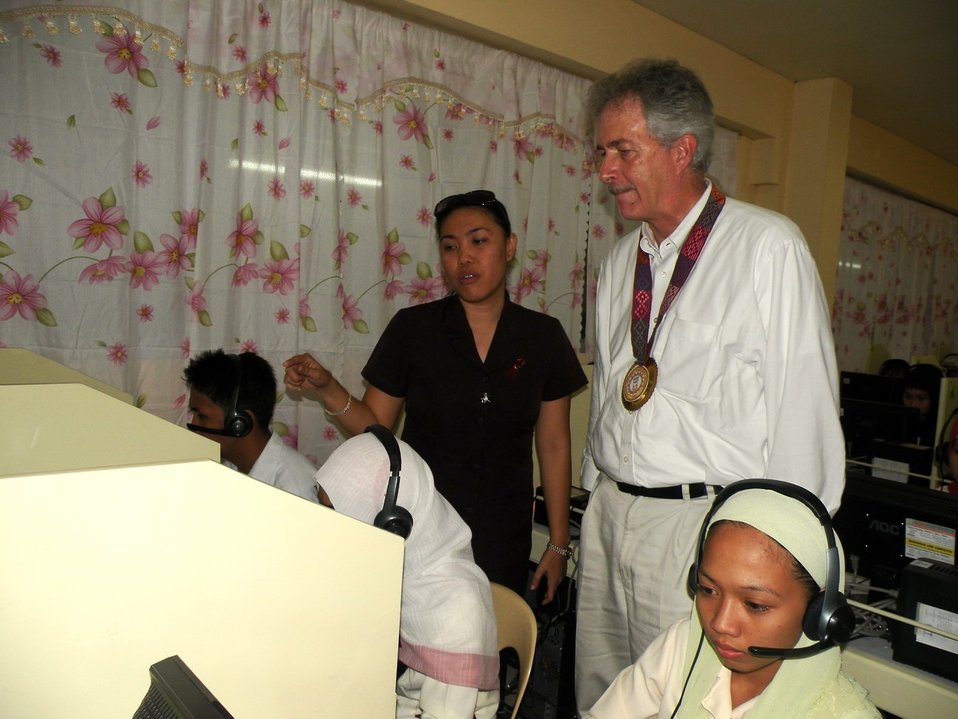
Under Secretary Burns Observes Filipinos Work on a USAID-Funded Project

U.S. Under Secretary William J. Burns observes Filipinos work on a USAID-funded project in Cotabato, Mindanao, Philippines, on July 21, 2010.